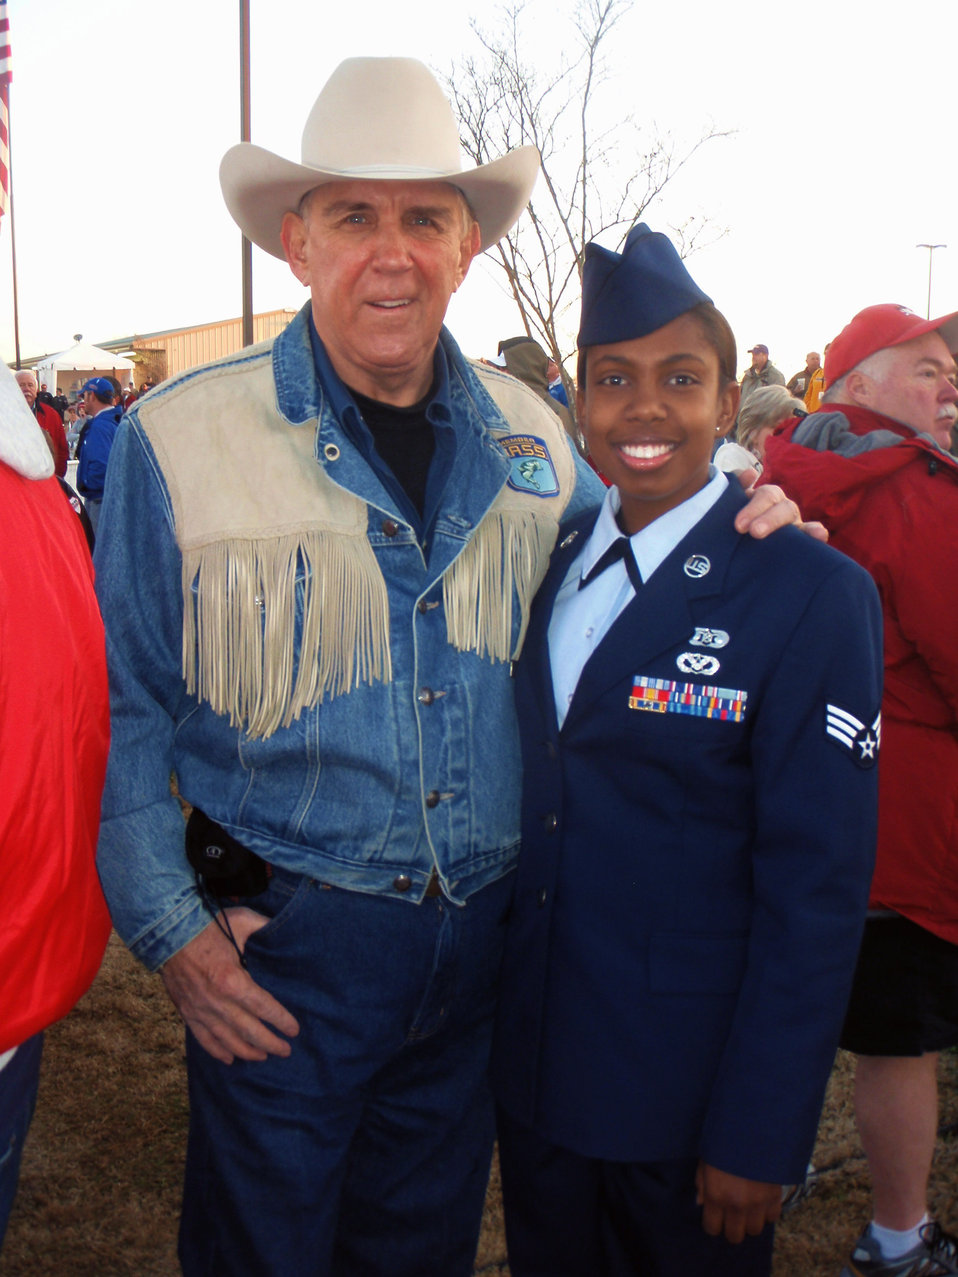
Airmen participate in 2009 ESPN Bassmaster Classic

Senior Airman Chonte Walker stands with Ray Scott after singing the national anthem Feb. 19 in Bossier City, La. Mr. Scott is the founder of the Bass Anglers Sportsman Society and creator of the first national bass tournament trail. Airman Walker sang the national anthem all three days of the classic for an estimated crowd near 20,000. Airman Walker is assigned to the 2nd Civil Engineer Squadron from Barksdale Air Force Base, La.